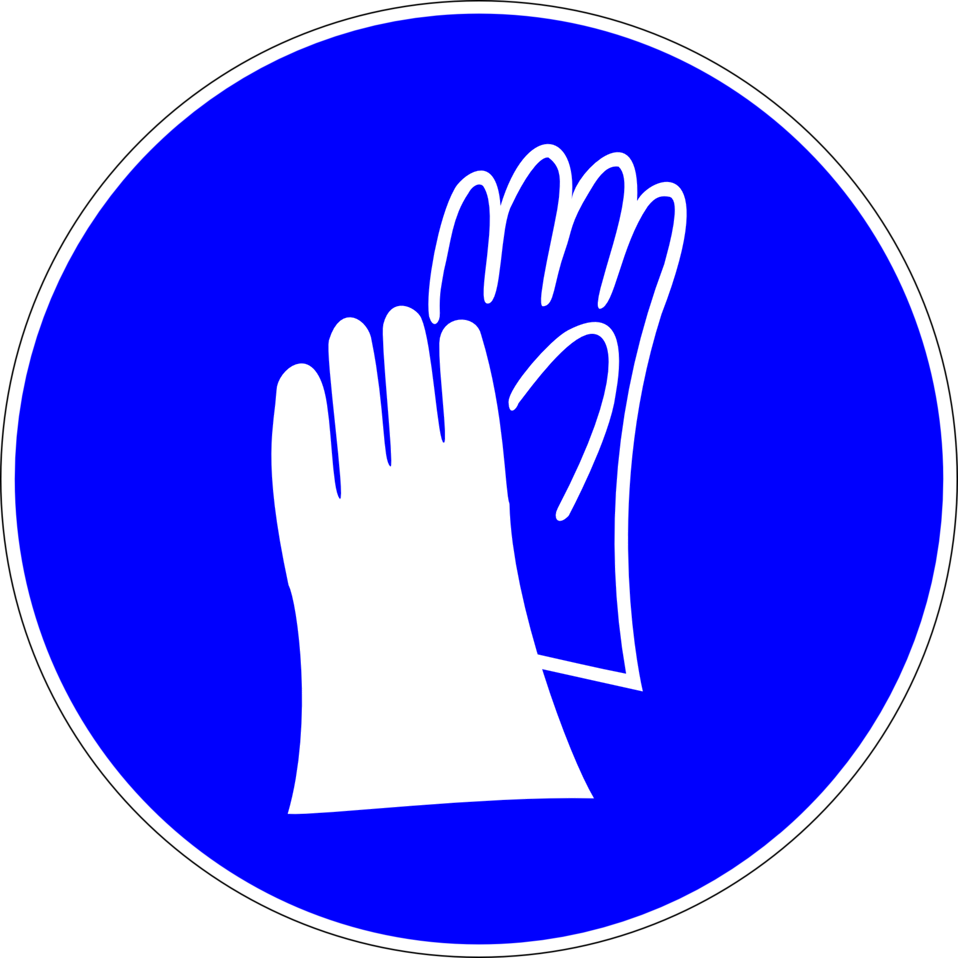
Deutsch: Handschutz benutzen, Gebotszeichen D-M006 nach DIN 4844-2